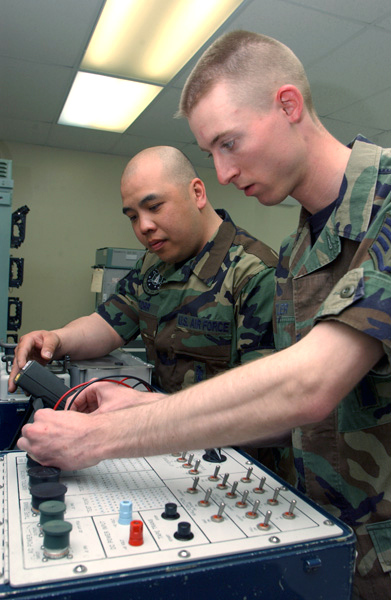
The 'Challenge' continues

VANDENBERG AIR FORCE BASE, Calif. -- Staff Sgts. Landon Cutler (front) and Ananh Torr troubleshoot a piece of equipment during an electronics laboratory exercise, a Guardian Challenge event. The Airmen are from the 91st Space Wing at Minot Air Force Base, N.D. Guardian Challenge takes place here May 2 to 6 and tests the wartime readiness of teams representing each missile and space wing unit from Air Force Space Command. Competition events include timed exercises in missile-crew operations, missile and space maintenance, spacelift operations, space and missile communications, missile code controllers, helicopter operations, chefs and security forces.